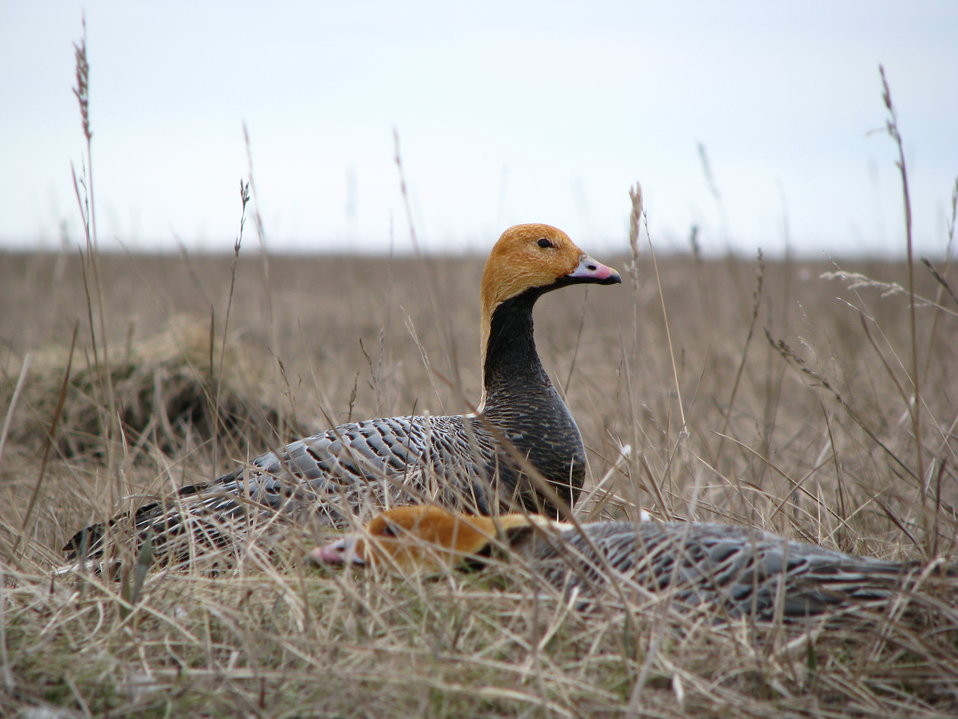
Emperor Goose pair

USFWS Yukon Delta NWR